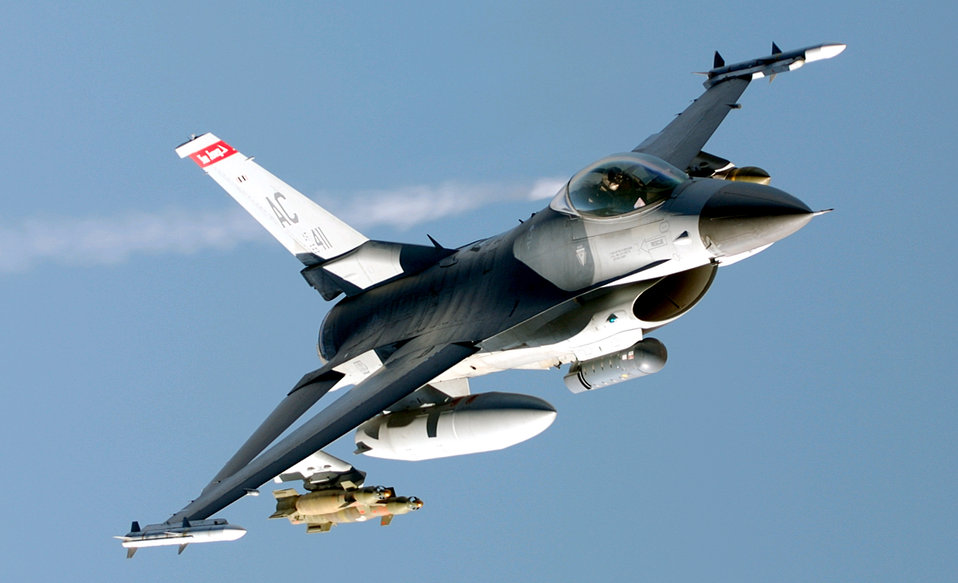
Fighting Falcon

OVER IRAQ -- An F-16 Fighting Falcon flies through the sky during a combat mission July 23 in support of Operation Iraqi Freedom.